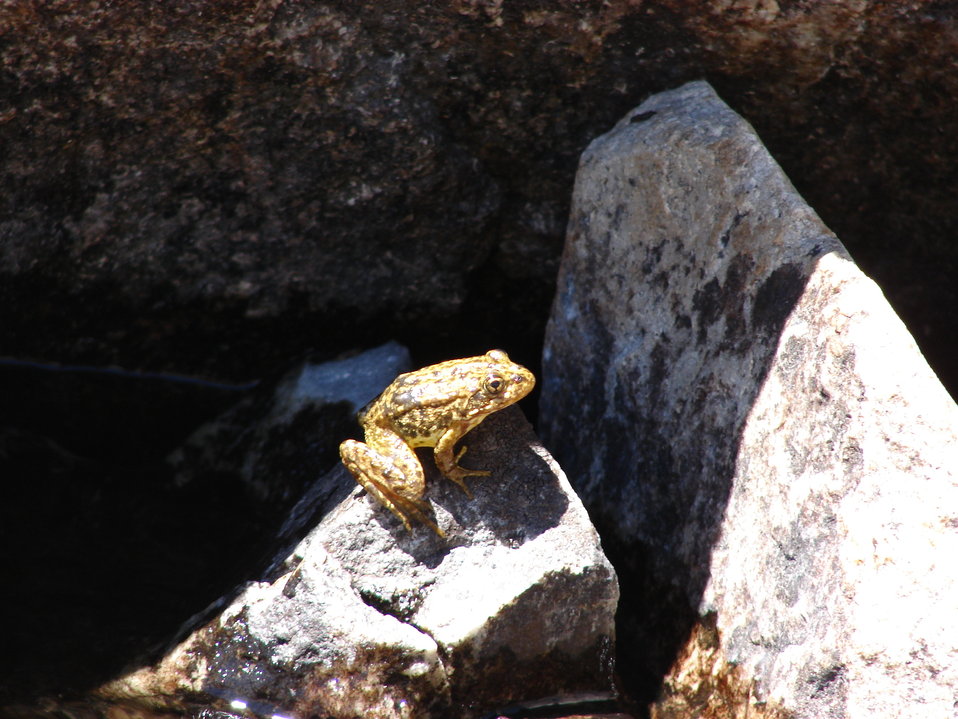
Yellow legged frog on a rock

The FWS is currently monitoring the following two populations of the Mountain Yellow-Legged frog

- Southern California population, endangered. Found in California and Nevada .

- all mountain yellow-legged frogs that occur north of the Tehachapi Mountains in the Sierra Nevada. This is a candidate for listing on the endangeres species act. Occurs in California and Nevada .
USFWS/Rick Kuyper